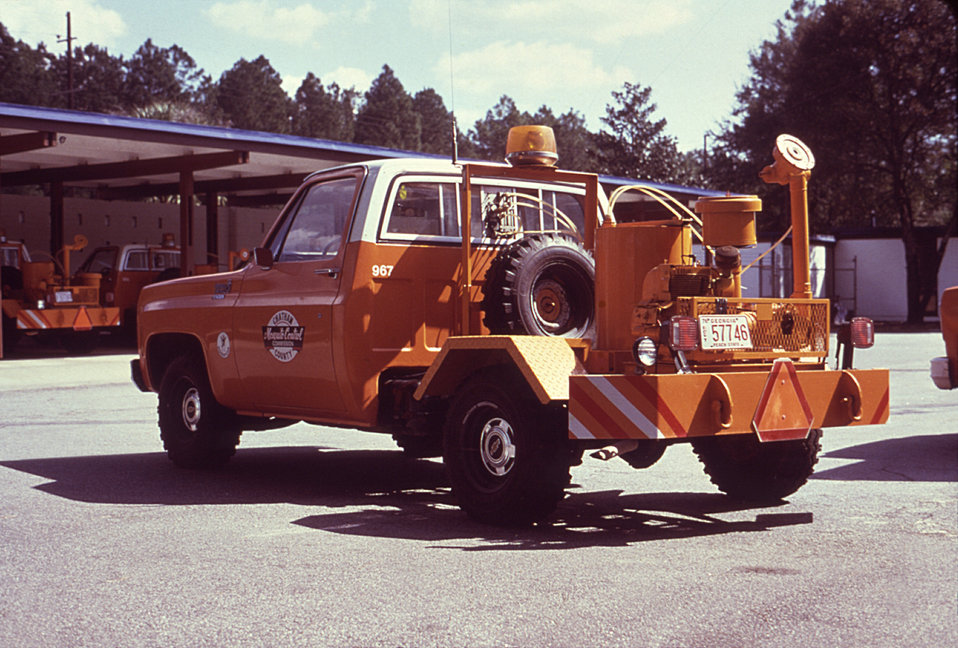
This 1976 image depicts a truck-mounted LECO-HD ULV (ultra-low volume) non-thermal fog generator, located in Chatham, Co. Georgia.